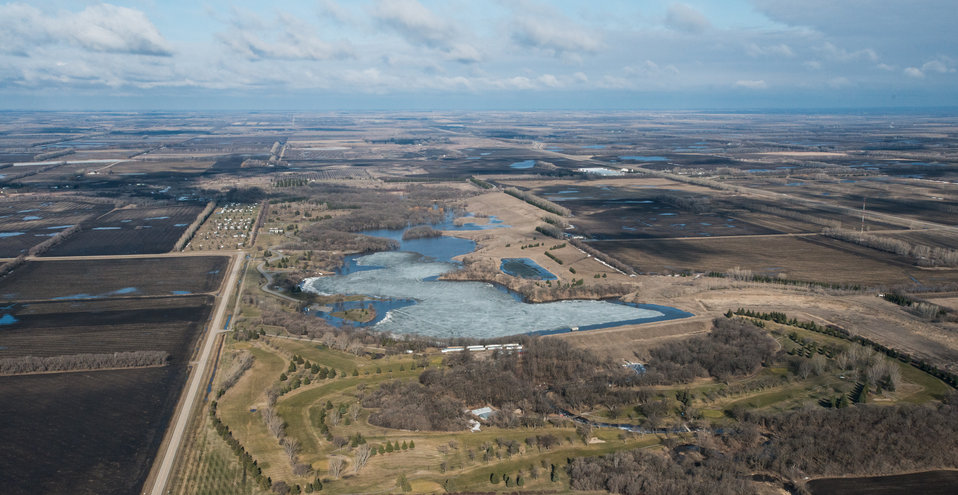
Larimore Dam, a Public Law PL83-566 Small Watershed Program, in Grand Forks County, ND, on Wednesday, May 1, 2013. A golf course bounds the outlet area. Other areas around the dam includes recreational and other activities.